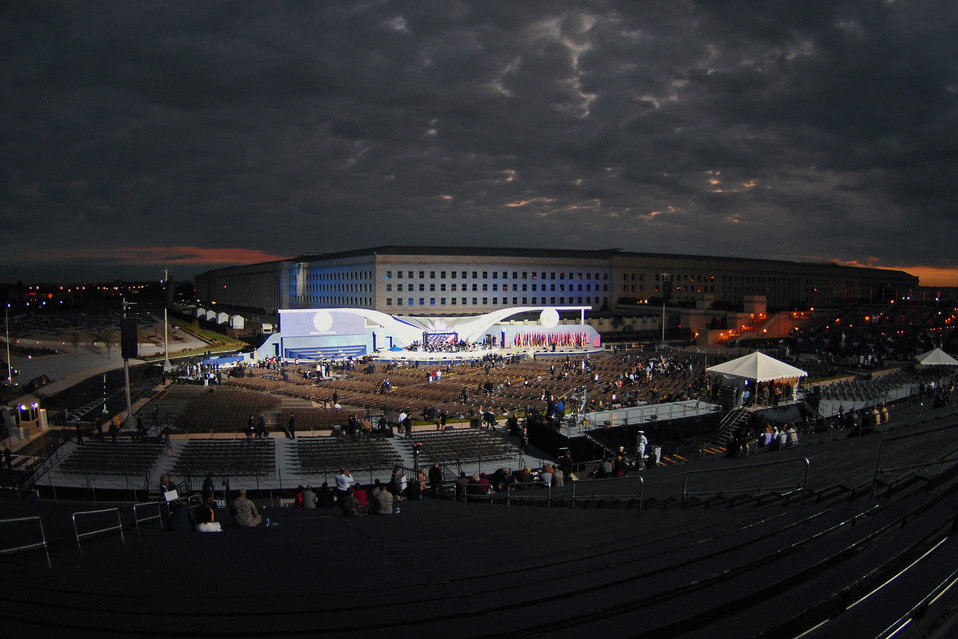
Pentagon Memorial opens to public

The sun rises over the main stage before the start of the Pentagon Memorial dedication ceremony Sept. 11 at Alexandria, Va. The national memorial is the first to be dedicated to those killed at the Pentagon on Sept. 11, 2001. The site contains 184 inscribed memorial units honoring the 59 people aboard American Airlines Flight 77 and the 125 in the building who lost their lives that day.